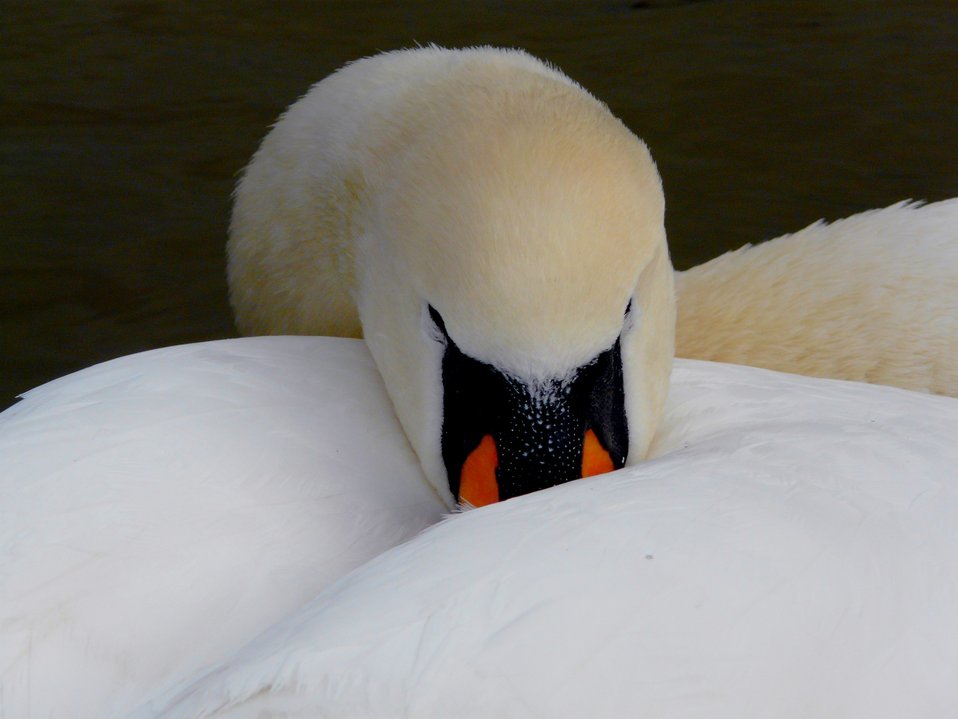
Playing hide and seek

Swan hiding it's beak.